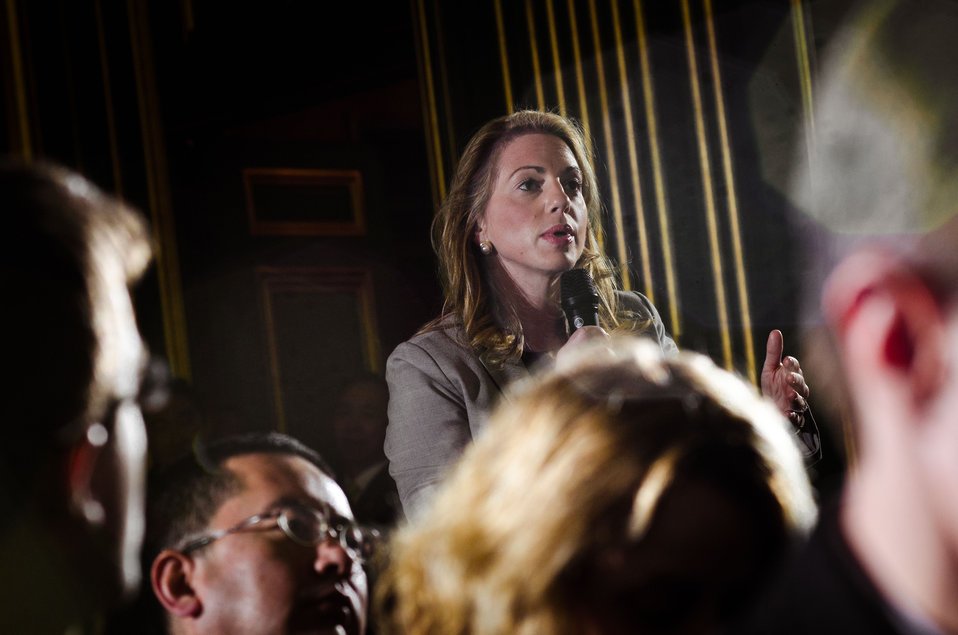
From a room full of international news media, CCTV America Washington Correspondent Jessica Stone asks a question, during the 23rd Session of the U.S. China Joint Commission on Commerce and Trade (JCCT) press conference, in the Andrew W. Mellon Auditorium in Washington, D.C. on Wednesday, Dec. 19, 2012. The JCCT holds high-level plenary meetings on an annual basis to review progress made by working groups that focus on a wide variety of trade issues. These working groups meet throughout the year to address topics such as intellectual property rights, agriculture, pharmaceuticals and medical devices, information technology, tourism, commercial law, environment, and statistics.